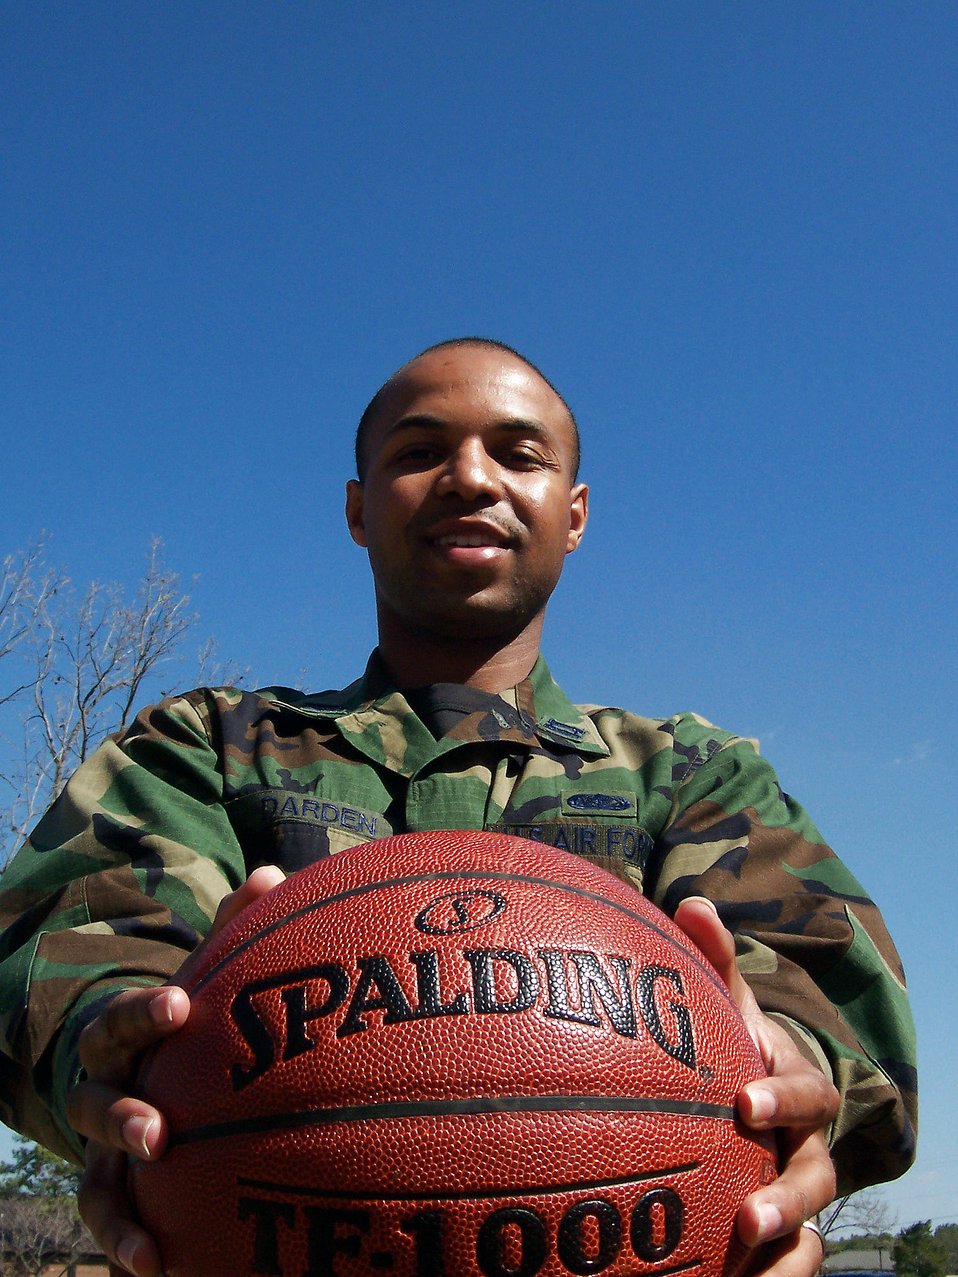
440th Airlift Wing officer shoots for a

Reserve Command member Capt. Kurtis Darden will be the captain of this year's All Air Force basketball team. The reservist , from Pope Air Force Base, N.C., is shooting for a